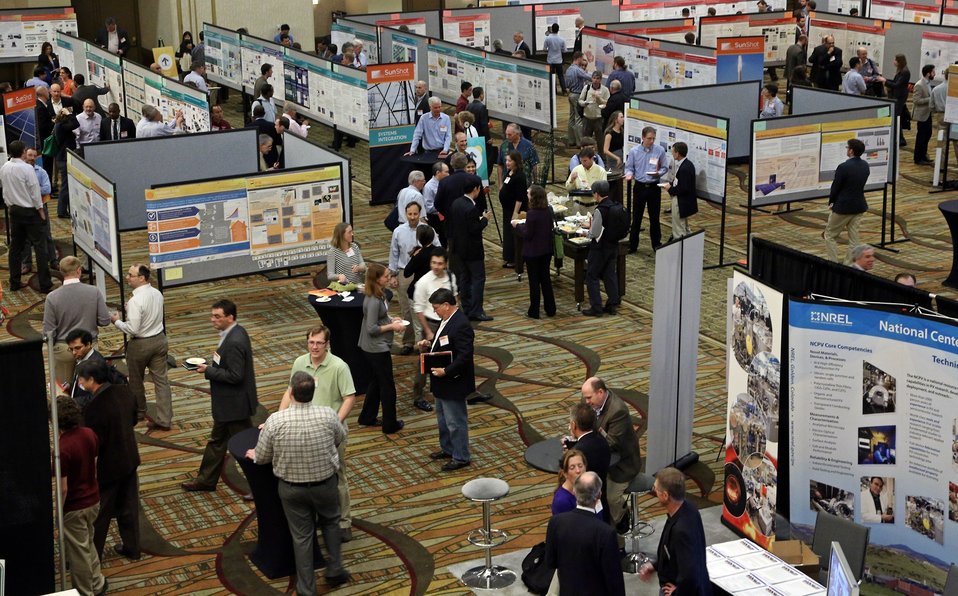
Tech Forum 9

The Tech Forum floor from above.